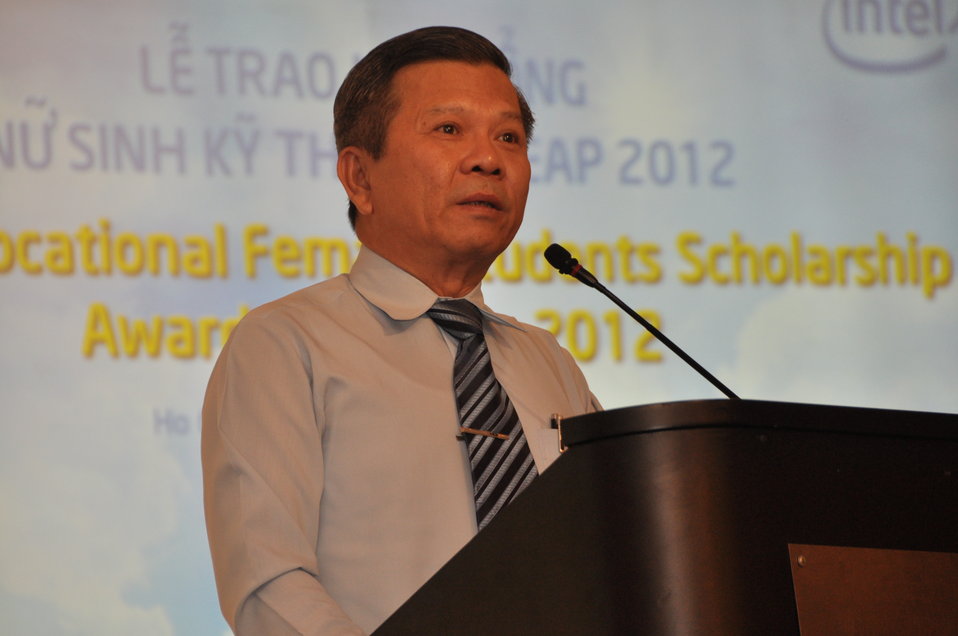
Mr. Nguyen Thanh Hiep, Director of Vocational Training, Ho Chi Minh Department of Labor, Invalids and Social Affairs, addresses the Female Student Scholarship Ceremony

Ho Chi Minh City, January 11, 2013